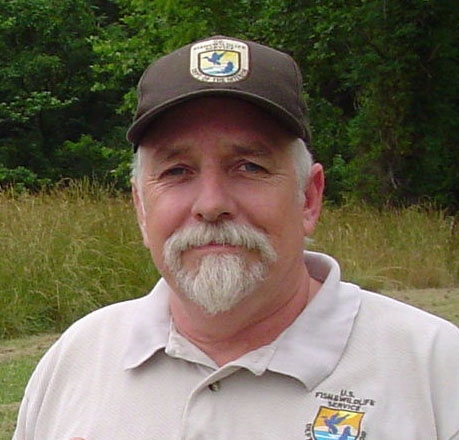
JoeMcCauley

Joe McCauley was refuge manager for 10 years at Rappahannock River Valley National Wildlife Refuge in Virginia until 2010 when he became chief of the Service’s Northeast Region Realty Division, which acquires land for the Refuge System. (USFWS)